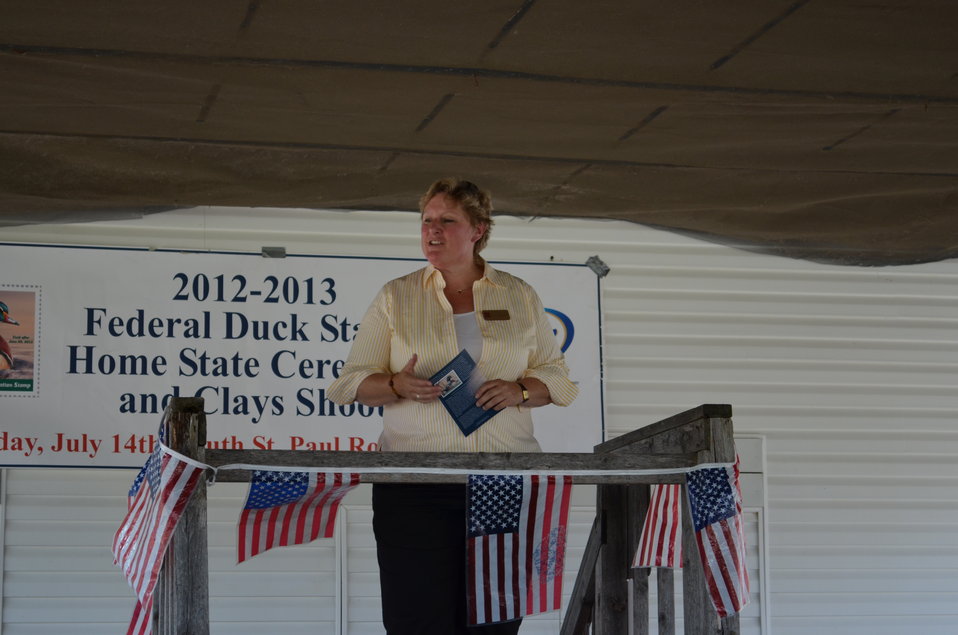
Mayor of South Saint Paul Beth Baumann welcomes event participants and guests to South Saint Paul.